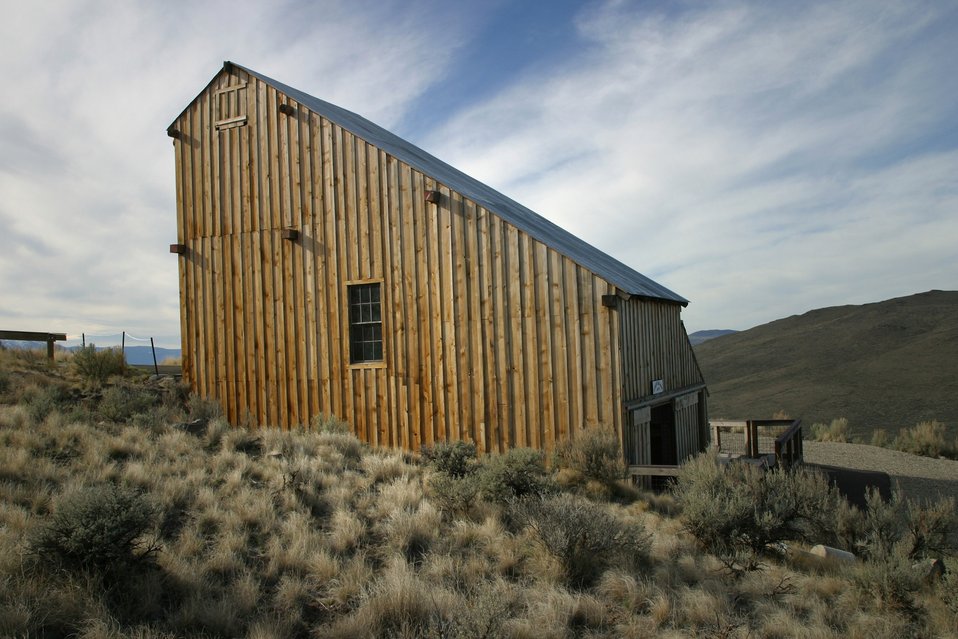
A replica of the Rabbit Mine 1926 stamp mill near Greenhorn in the Blue Mountains of eastern Oregon. It is used to interpret the importance of mining in western history, and the relationship of gold mining to the westward migration story.